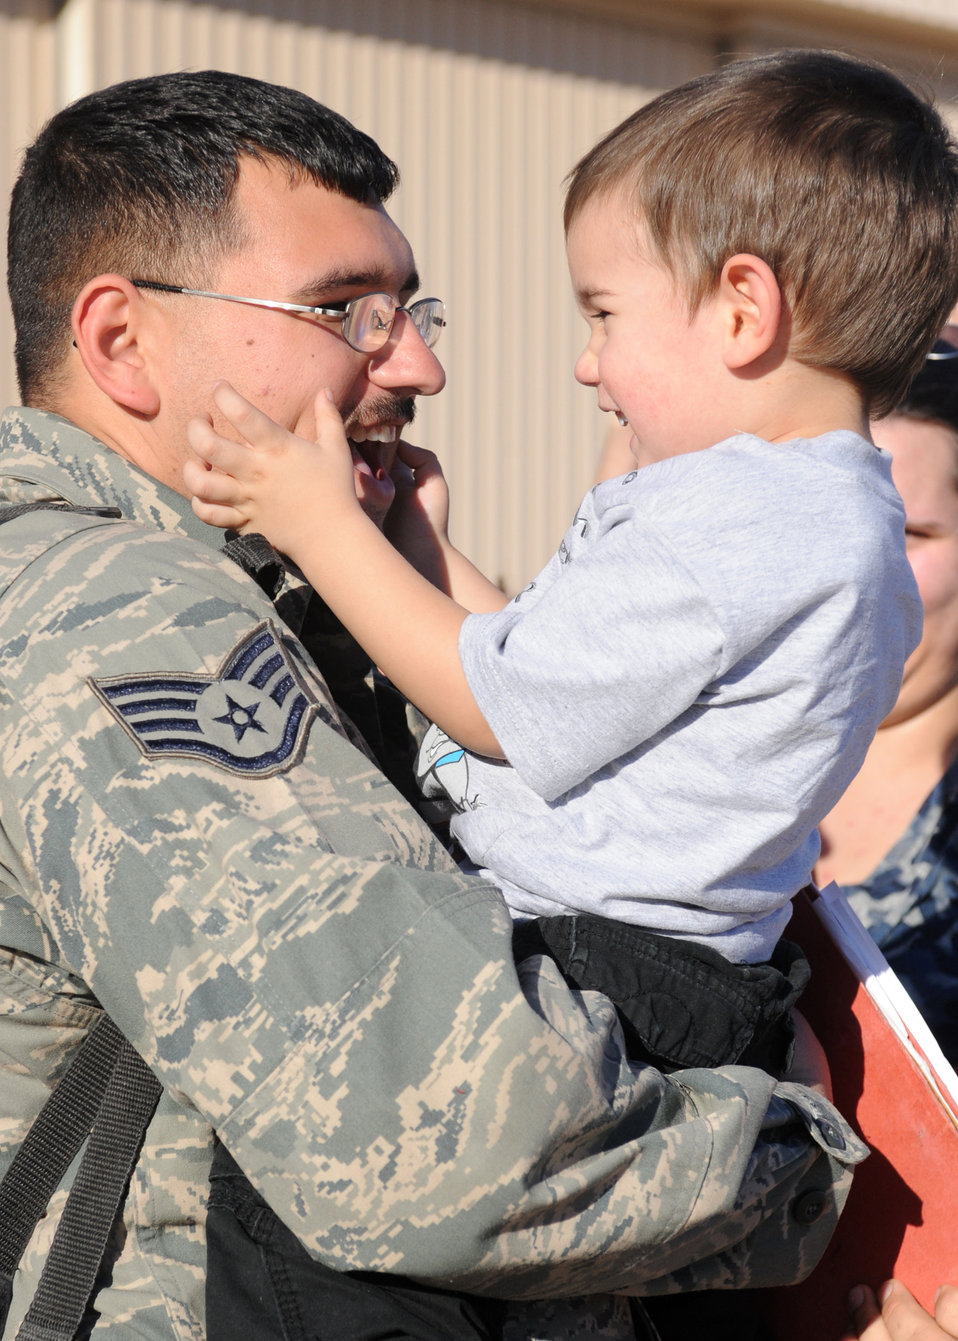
Daddy's home!

Staff Sgt. Jeremy Lala plays with his son Alexander Jan. 27, 2011, at Dyess Air Force Base, Texas, after returning from a deployment. Sergeant Lala is a member of the 7th Aircraft Maintenance Squadron. He was deployed to Southwest Asia in support of operations New Dawn and Enduring Freedom.